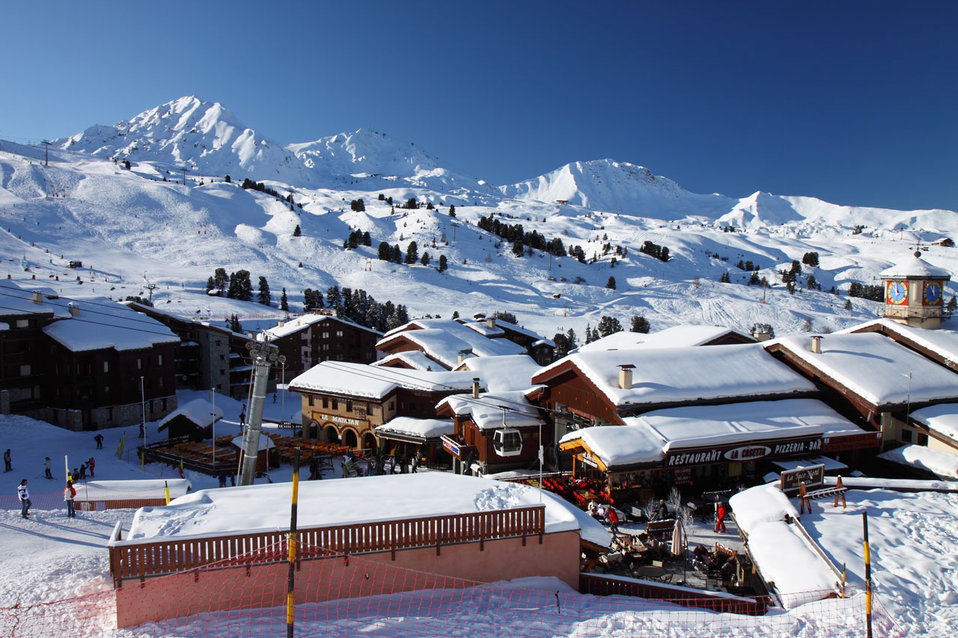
Belle plagne ski resort in france.